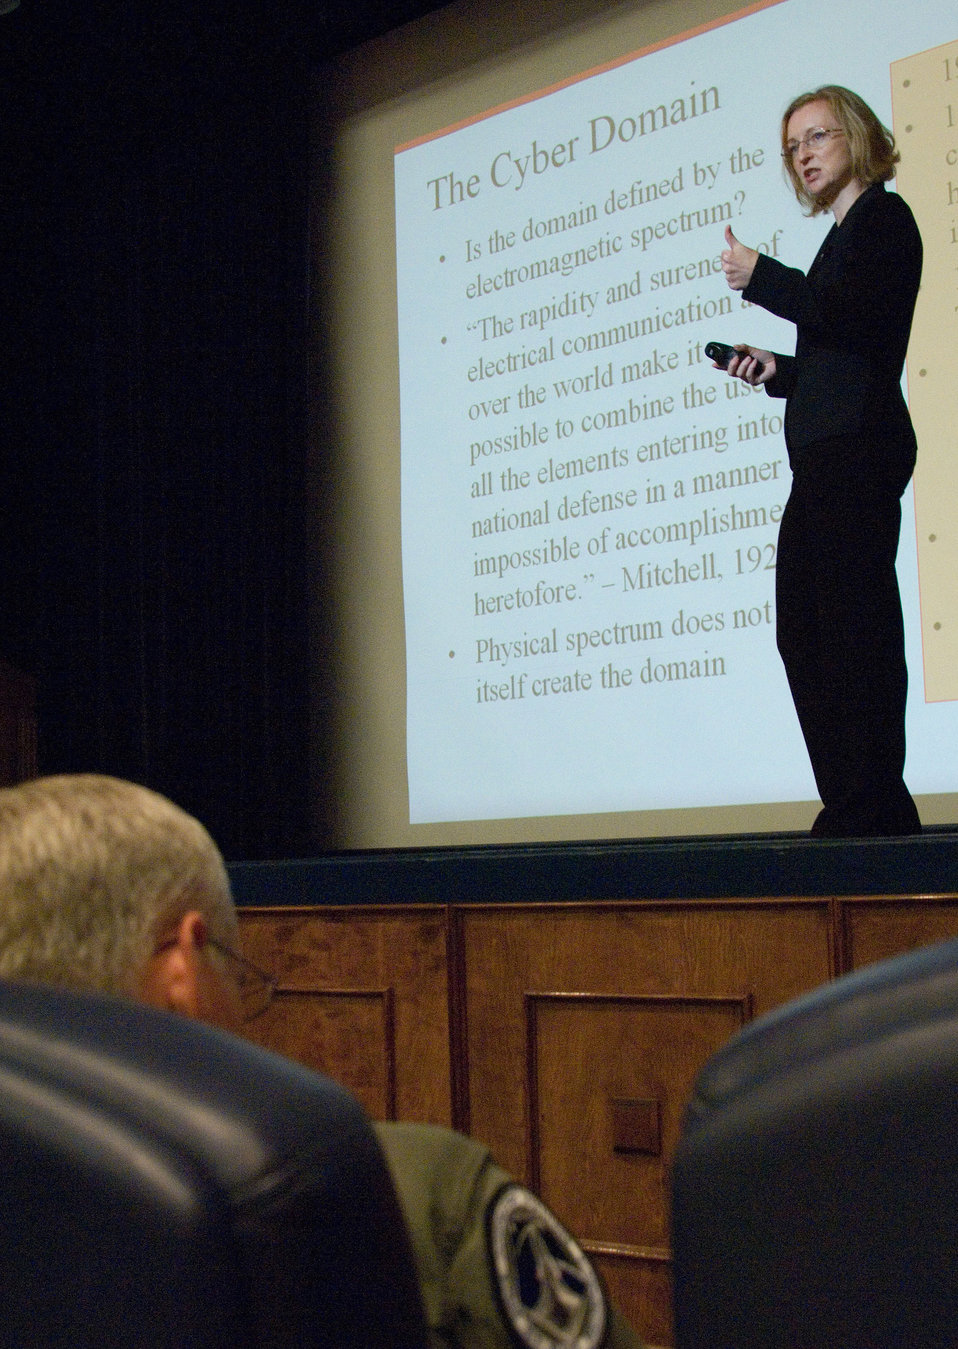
Air Force Cyberspace Symposium

Dr. Rebecca Grant, president of IRIS Independent Research, speaks to attendees July 15 at the Cyberspace Symposium at Maxwell Air Force Base, Ala., on policy issues and the nature of cyberspace. The symposium brought some 250 professional civilian and military experts who gathered to discuss the implications of cyberspace as it relates to the Air Force and national defense.